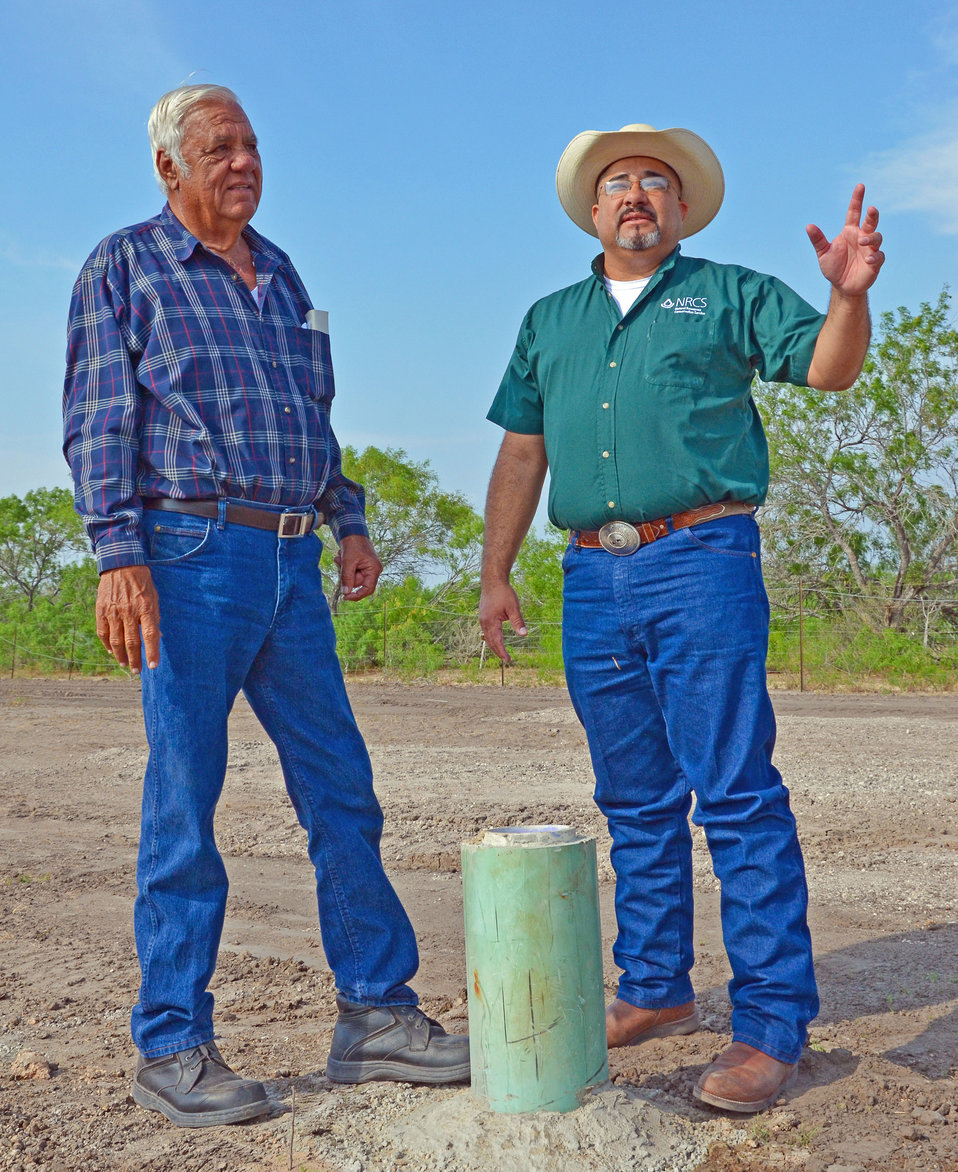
Rancher Willie Utley of Benavides, TX and the U.S. Department of Agriculture (USDA) Natural Resources Conservation Service (NRCS) district conservationist Sammy Guerra stand at the site of the new water well and discuss the successful drilling operation. Utley applied for and received funding from USDA NRCS to help install a new solar-powered water well through the USDA’s national StrikeForce Initiative for Rural Growth and Opportunity.